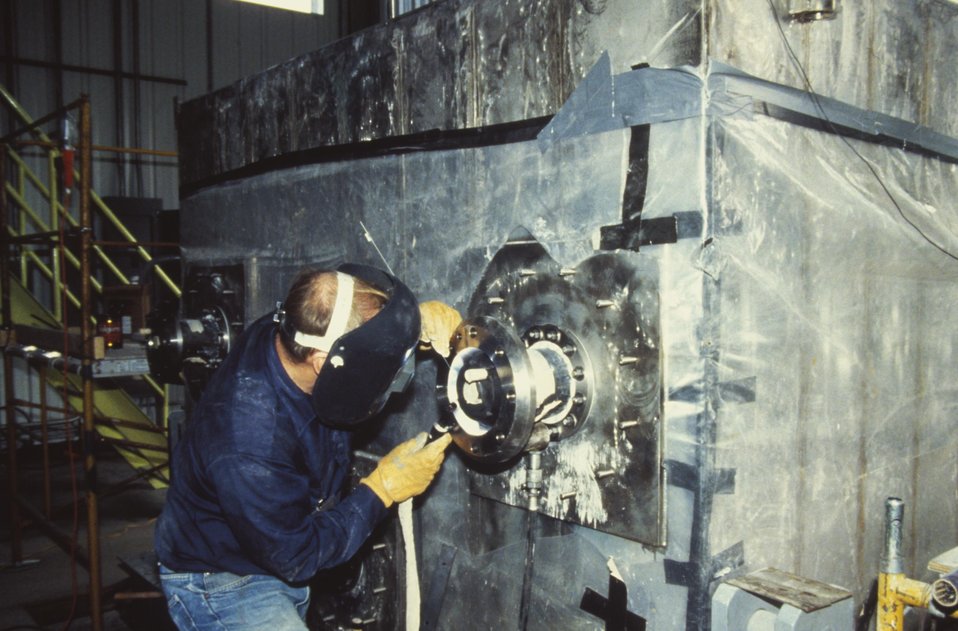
WELDER COMPLETES WORK ON A PORT IN THE CERAMIC MELTER AT THE WEST VALLEY DEMONSTRATION PROJECT.

BETWEEN 1966 AND 1972, SOME 600 METRIC TONS OF SPENT NUCLEAR FUEL WERE REPROCESSED AT THE NUCLEAR FUEL SERVICES, INC. PLANT IN WEST VALLEY, NEW YORK. THE FUEL RODS WERE CONVERTED INTO A SLUDGE WHICH WAS STORED IN UNDERGROUND TANKS ON THE SITE. AT THE TIME OF THE PLANT'S CLOSING, 600,000 GALLONS OF HIGH-LEVEL RADIOACTIVE LIQUID WASTE WERE STORED IN THE TANKS. TODAY, THE FACILITY, RENAMED THE WEST VALLEY DEMONSTRATION PROJECT, IS BEING USED TO ILLUSTRATE TECHNIQUES FOR THE SOLIDIFICATION AND PREPARATION OF HIGH-LEVEL WASTE FOR PERMANENT DISPOSAL. TECHNICIANS WILL CONVERT THE RADIOACTIVE SLUDGE INTO A SAFE GLASS SOLID (BOROSILICATE GLASS) USING A SLURRY-FED CERAMIC MELTER. SELECTED AREAS OF THE REPROCESSING FACILITY ARE BEING DECONTAMINATED AND MODI-FIED FOR THE PROJECT, AND PLANNING HAS BEEN COMPLETED FOR MAJOR REFURBISHMENTS IN OTHER KEY AREAS NEEDED TO SUPPORT IT. SOLIDIFICATION OF THE HIGH-LEVEL WASTES AT WEST VALLEY IS EXPECTED TO BE COMPLETED IN 1990.